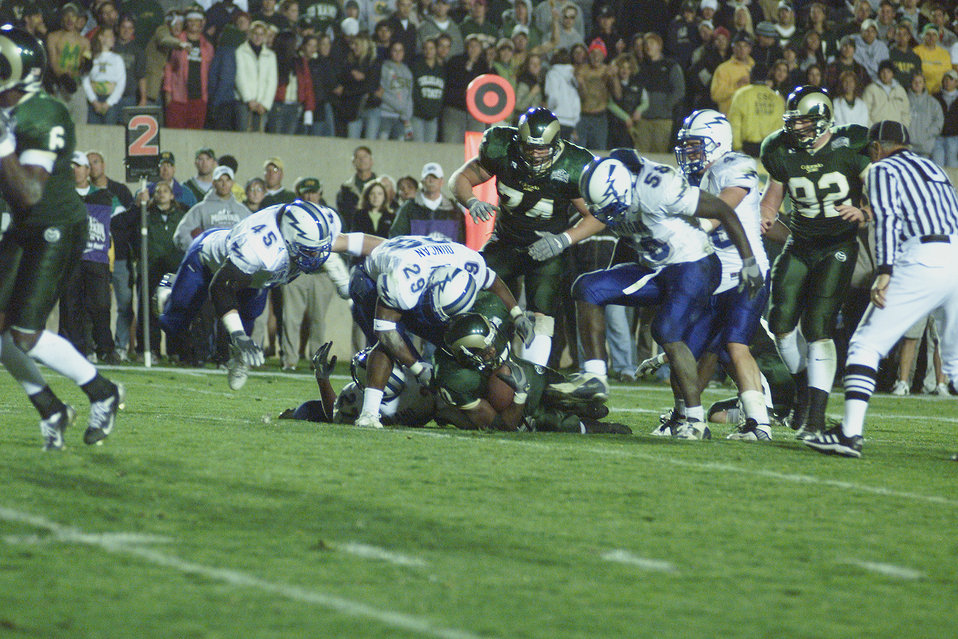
CSU grounds Falcons

FORT COLLINS, Colo. -- Air Force Academy linebackers Kenny Smith (45) and Marchello Graddy (58) join defensive back Larry Duncan (29) in bringing down Colorado State University running back Marcus Houston during their conference game Oct. 16. CSU won the game 30-20.